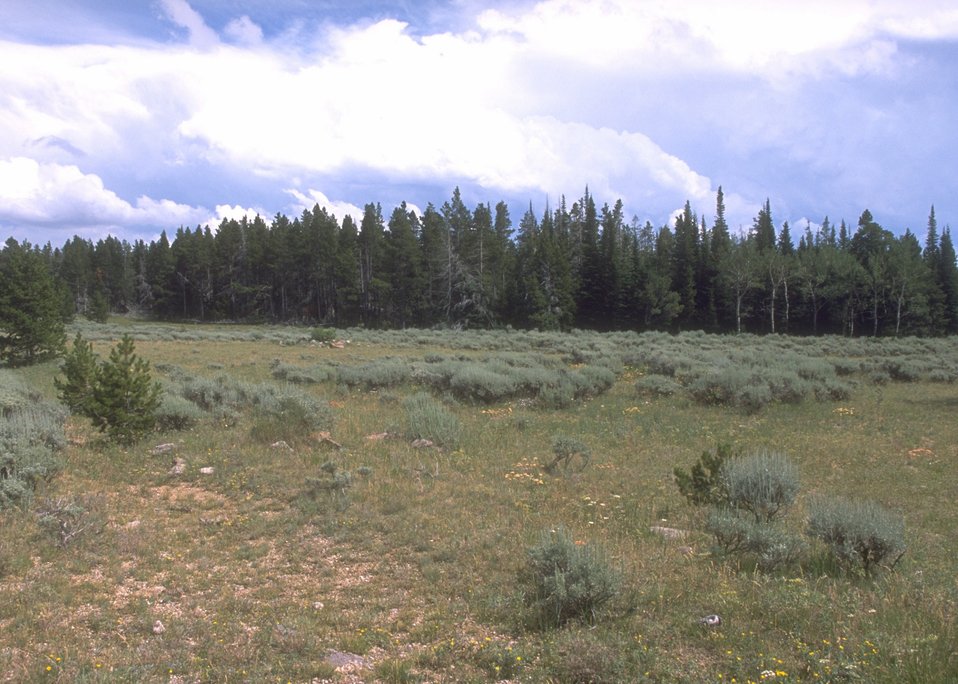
View of Natural Area in Muddy Mountain Recreation, Casper Field Office.